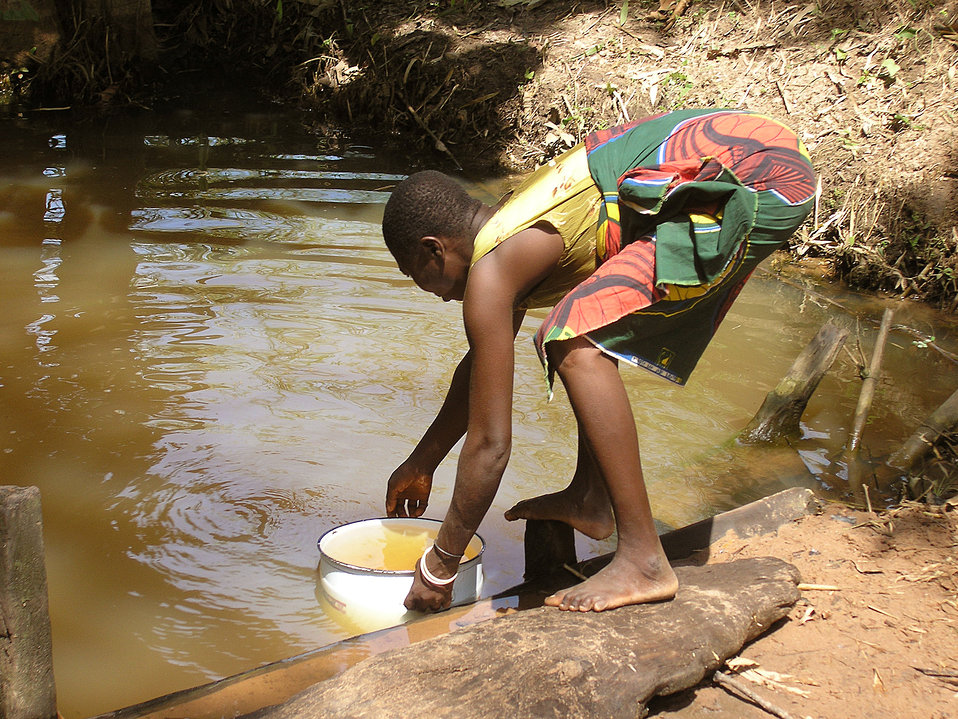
This young girl was collecting water from a sacred pond in Ogi, Nigeria, but she won't get Guinea worm because the water had been treated, and steps had been installed, so people couldn't contaminate the water.